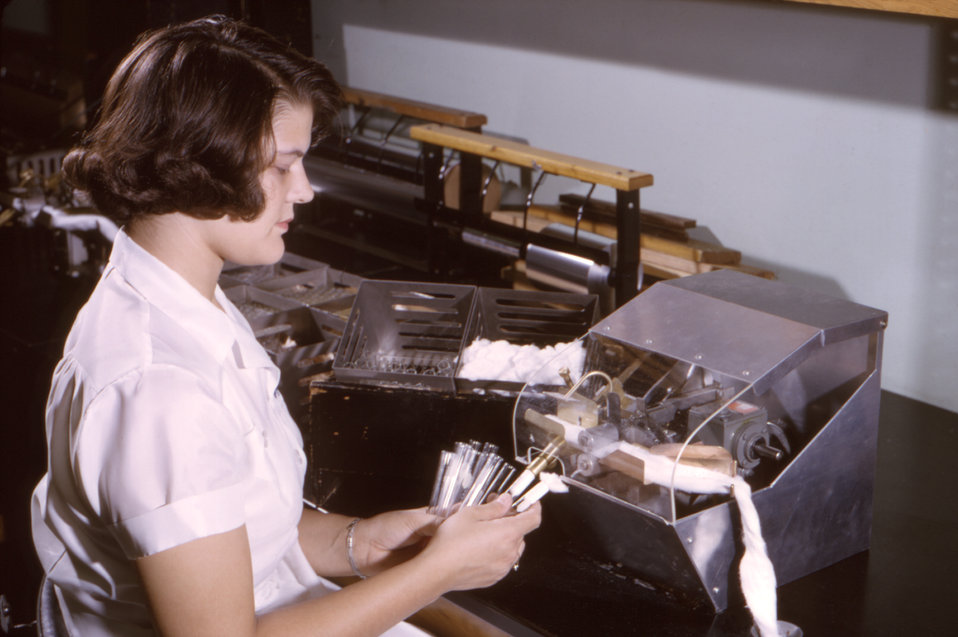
This historic 1965 image depicted a Centers for Disease Control's laboratory technician as she was operating an automatic test tube plugger.